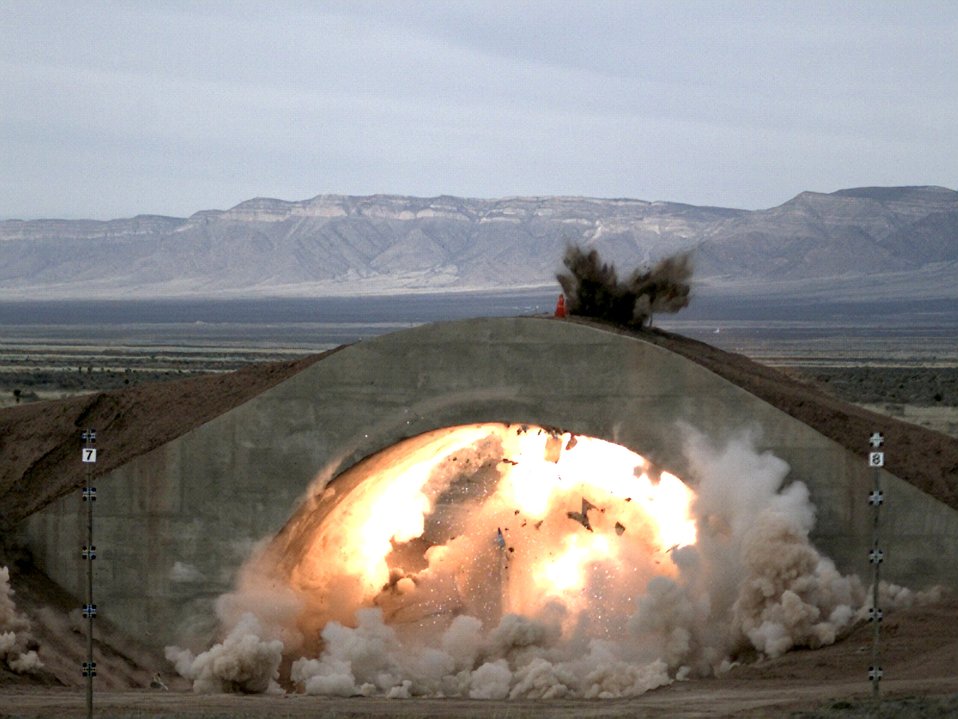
SDB testing

EGLIN AIR FORCE BASE, Fla. -- A small diameter bomb hits its target. The SDB is a 250-pound class munition providing the warfighter with a four-fold increase in weapons per aircraft station. It can penetrate more than 13 feet into a target and can be accurate from up to 70 miles away. The bombs are delivered in single, reusable aluminum weapon containers or loaded on a miniature munitions carriage.